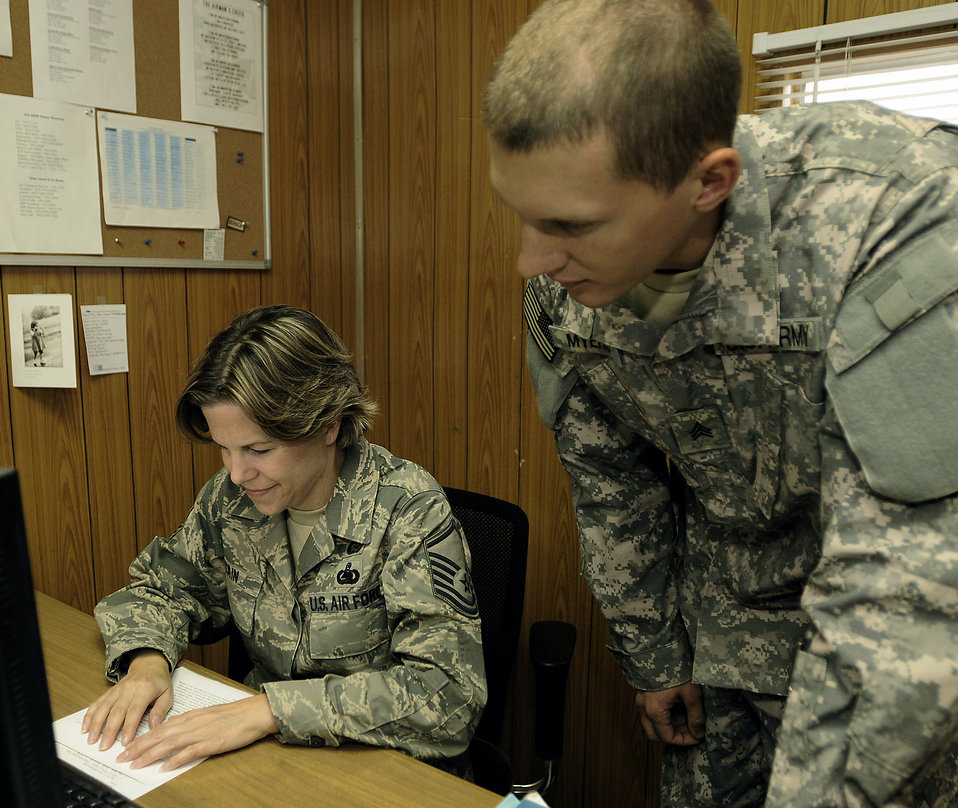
Information center to ease transition to Air Force base management

Master Sgt. Laura Cain proctors a college exam for Army Sgt. John Meyers in the Red Tail Education Center at Joint Base Balad, Iraq. A joint-service initiative, called Base Operating Support-Integration, is scheduled to take effect Nov. 6, moving responsibility for many life-support service functions from the Joint Base Balad Mayor Cell to the 332nd Expeditionary Mission Support Group. Sergeant Cain, an education advisor assigned to the 332nd Expeditionary Force Support Squadron, is deployed from Keesler Air Force Base, Miss. Sergeant Meyers is assigned to the 9th Psychological Operations Battalion deployed from Fort. Bragg, N.C.